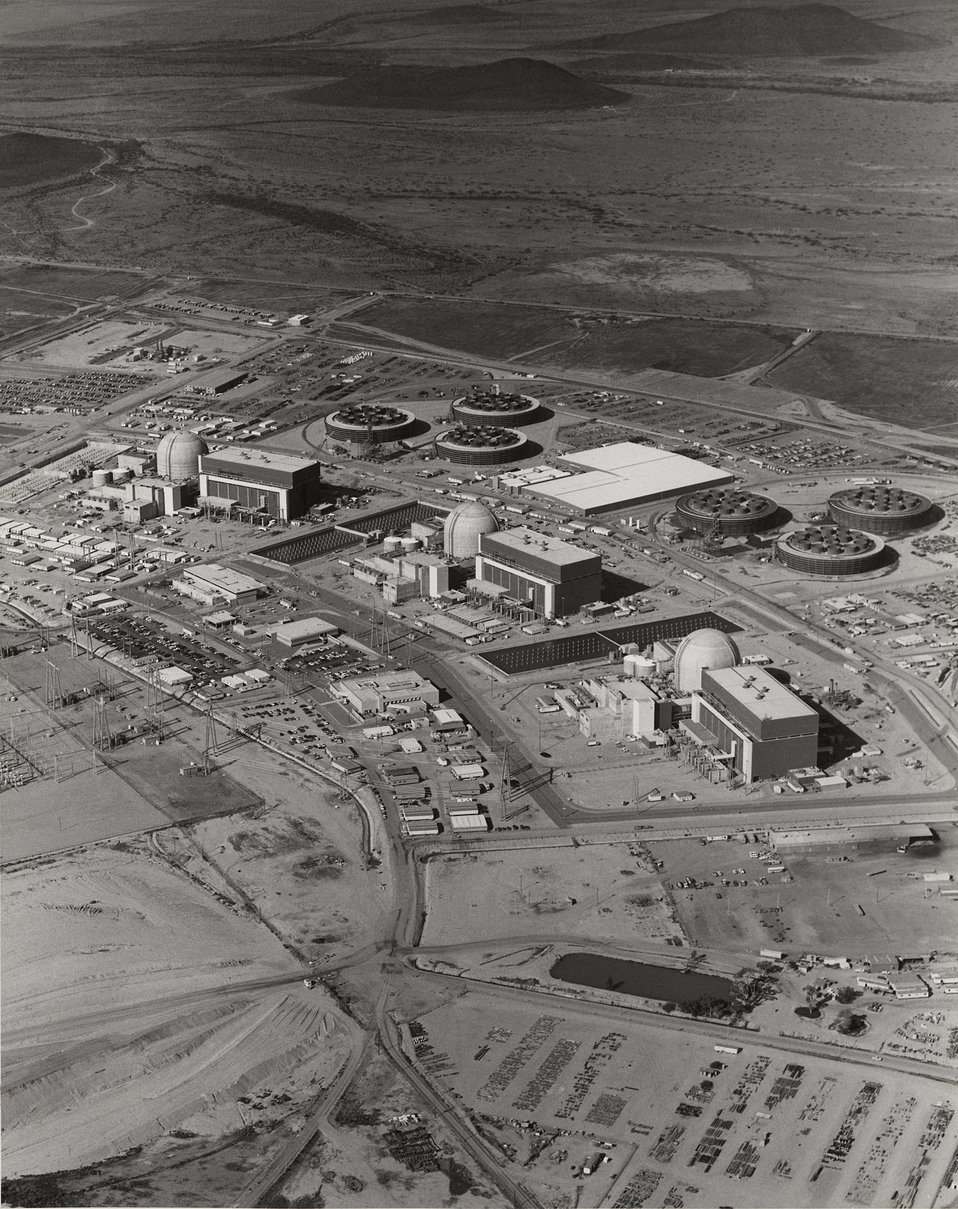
Palo Verde in Arizona is the U.S. largest nuclear power plant. Each of its three units has a set summer generating capability of 1,270 megawatts of electricity. Two units entered commercial operation in 1986 and the third in 1987.